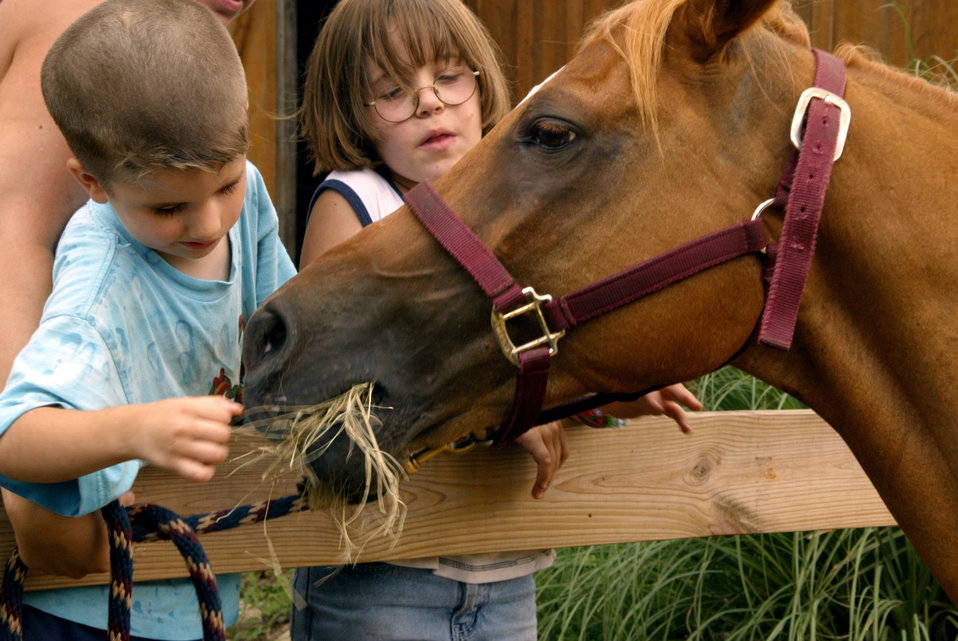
Horsing around

SPRING LAKE, N.C. -- Colton Graf feeds hay to Dezi, a horse at the Equus Heals ranch here. Volunteers from the 2nd Airlift Squadron at nearby Pope Air Force Base helped the nonprofit organization by filling ditches and trimming trees Aug. 2. Colton and more than 20 other disabled children visit the ranch each week to ride horses for mental and physical therapy.